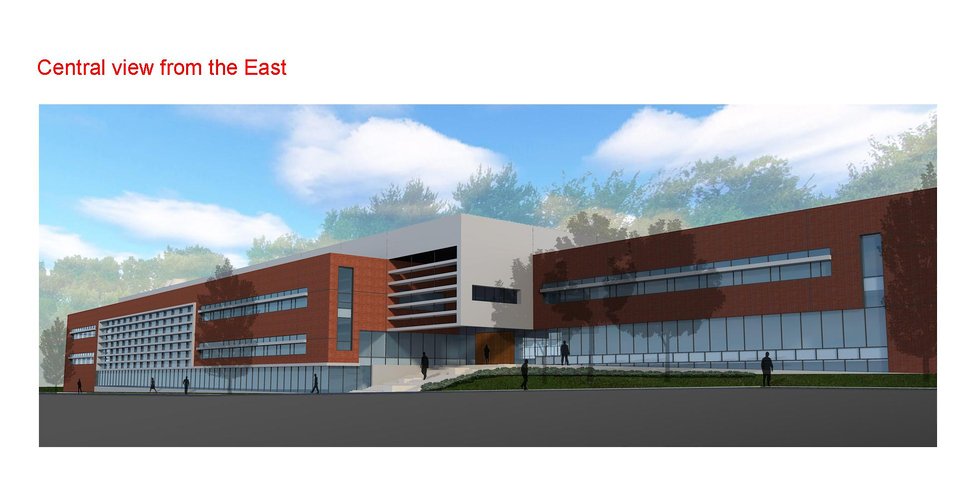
Artist rending of the new building at Oak Ridge National Laboratory to be named Chemical and Materials Sciences Building, view from the east.

The Chemical and Material Sciences Building is made possible by the American Recovery and Reinvestment Act. The funds will support a variety of DOE Office of Science - sponsored construction, laboratory infrastruction, and research projects across the nation. As a part of ORNL's Modernization standards, the new facility will be LEED certified by the Green Building Council for excellence in sustainability and low energy consumption. The stimulus funds will accelerate construction and enable the project to be completed in 2011, rather than the 2012 as originally scheduled.